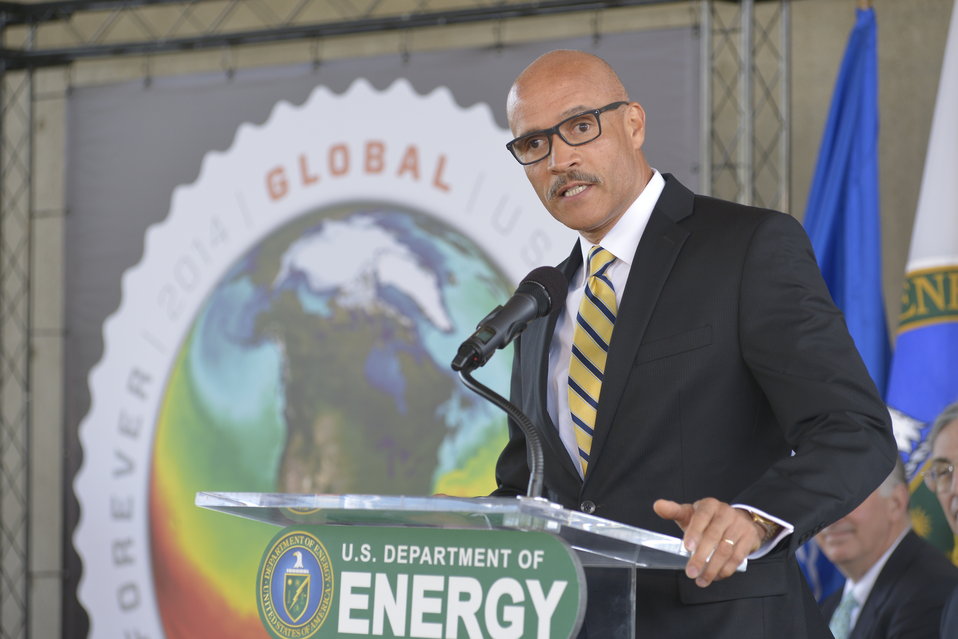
U.S Postal Services introduces a new Global: Sea Surface temperatures forever stamp at the Earth Day program at Department of Energy on April 22, 2014. ( T.Day, C.Williams, C.Anderson II, J.Colin Ph.D, Dr. K. Sullivan, K.Tobin Ph.D, W. Gicher Jr)